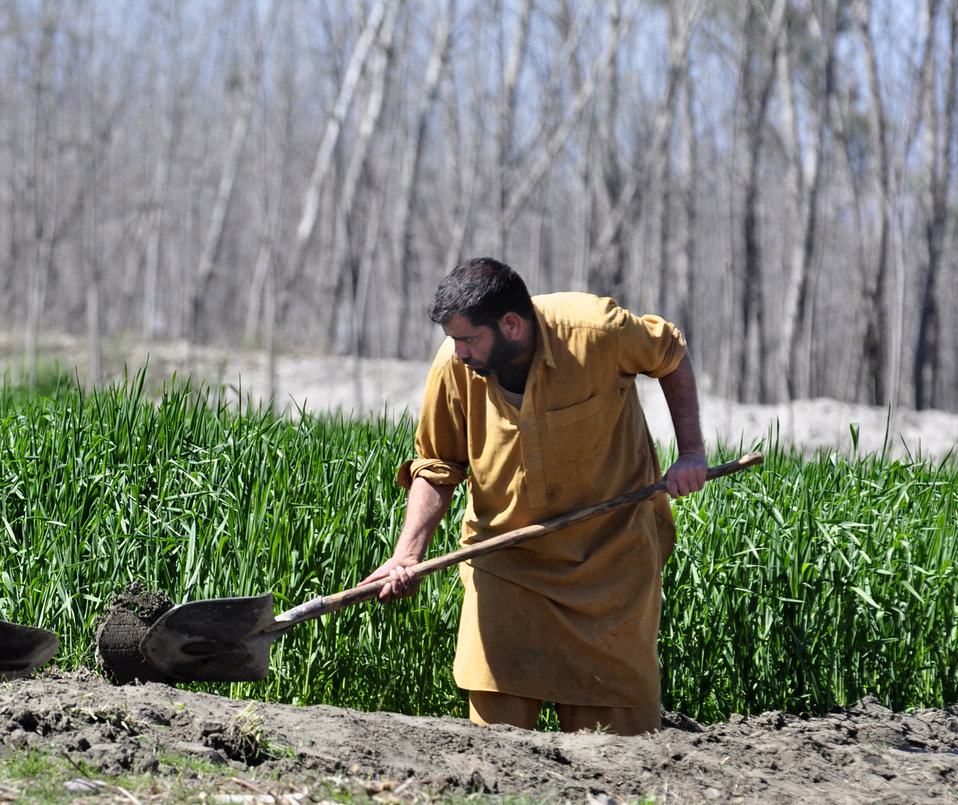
2011 March: USAID's Agricultural Recovery Program in 22 districts of Khyber Pakhtunkhwa, Punjab and Balochistan is an excellent example of the impact US development assistance can have. We have helped more than 500,000 farmers salvage the winter planting season and livestock after the floods. As a result, wheat farmers have nearly doubled their harvests. More than 5 million people have benefited. These photos show progress of the USAID Agricultural Recovery Project in Khyber Pakhtunkhwa.